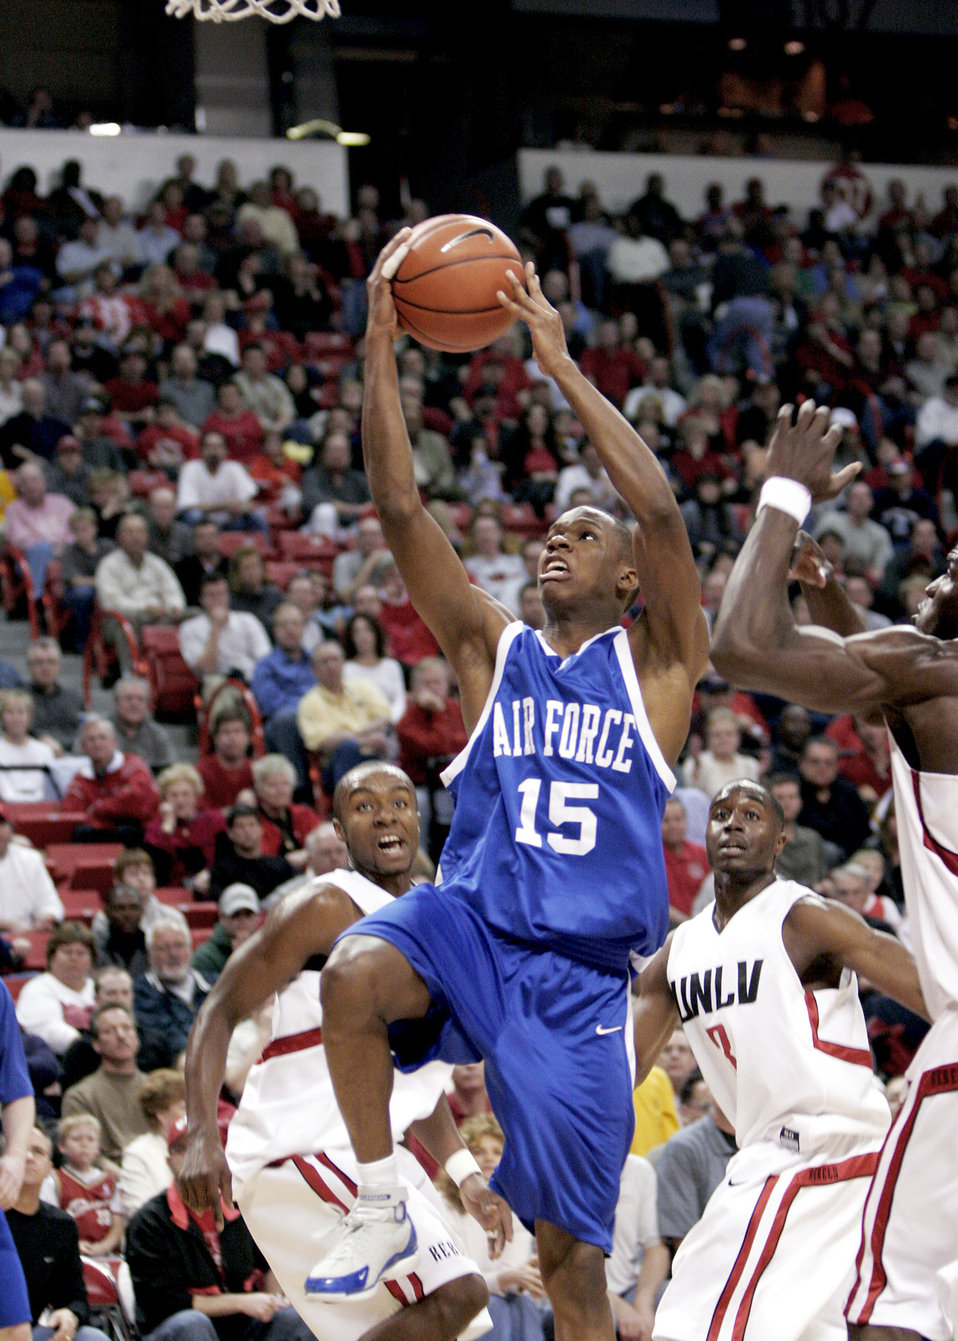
Antoine Hood

Then 2nd Lt. Antoine Hood shows off his Denver Nuggets jersey. Lieutenant Hood was offered a spot on the NBA team and played professionally before he returned to active duty to fulfill his service commitment. The Captain is now eligible to play again and is planning to return to the league.